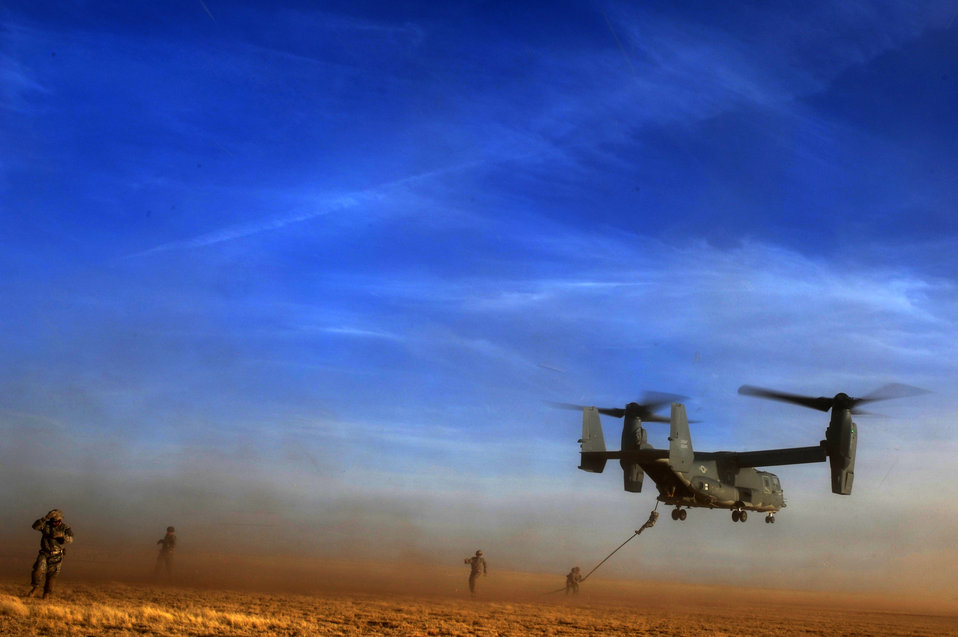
Just dropping in

Soldiers assigned to Alpha Company, 4th Battalion, 10th Special Forces Group, move away after exiting a CV-22 Osprey via rope March 1, 2011, during Emerald Warrior at Cannon Air Force Base, N.M. Emerald Warrior is an annual two-week joint/combined tactical exercise. sponsored by U.S. Special Operations Command officials.